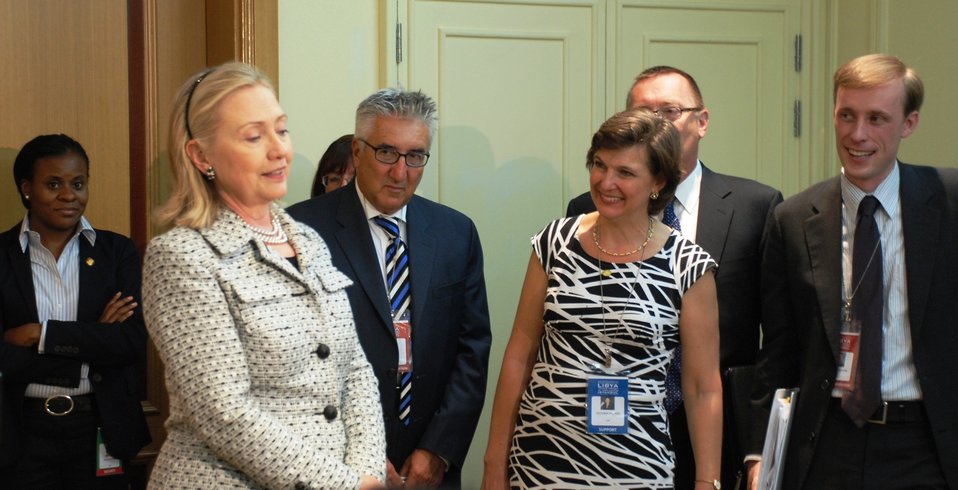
Secretary Clinton Addresses Reporters After Fourth Libya Contact Group Meeting

U.S. Secretary of State Hillary Rodham Clinton addresses reporters after participating in the fourth Libya Contact Group Meeting at the Çırağan Palace in Istanbul, Turkey, on July 15, 2011.